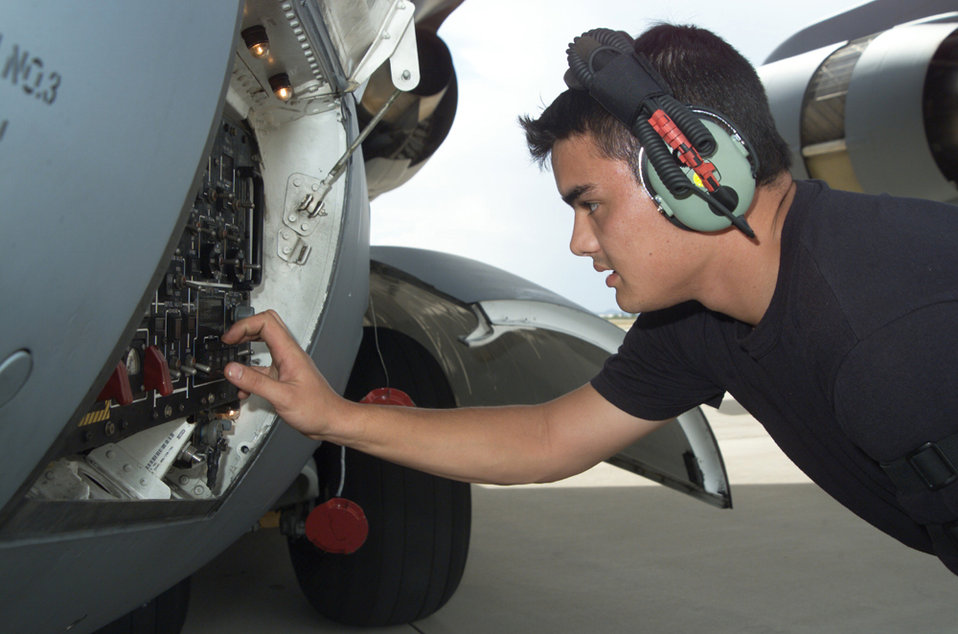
Final check

DAVIS-MONTHAN AIR FORCE BASE, Ariz. - Senior Airman Jeff Smith performs post flight checks on a C-17 Globemaster III here Aug. 13. Airman Smith is a crew chief assigned to the 437th Airlift Wing at Charleston Air Force Base, S.C.